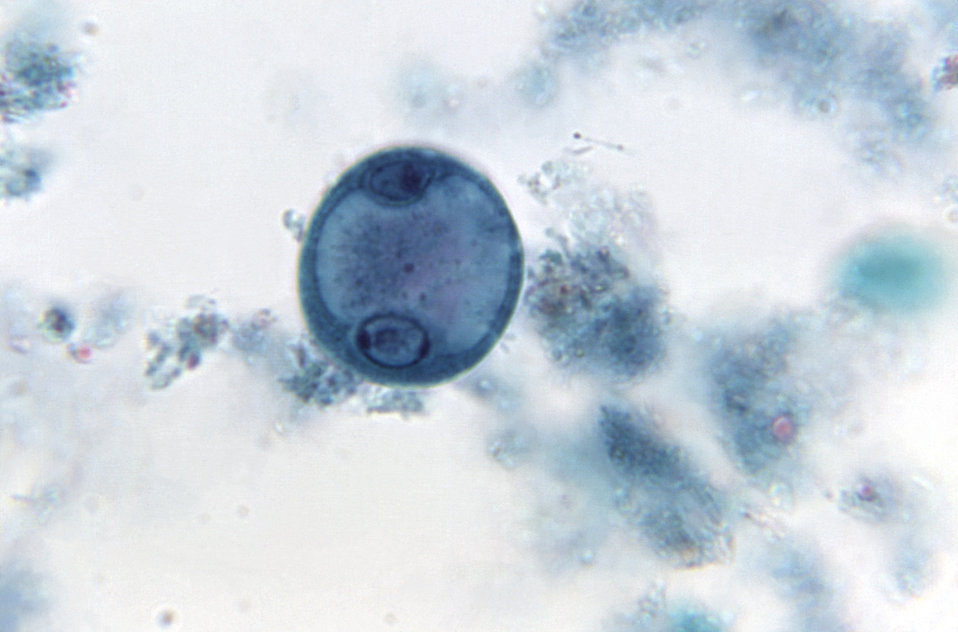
Magnified 1150X, this trichrome-stained photomicrograph revealed the presence of an immature parasitic Entamoeba coli binucleated cyst.